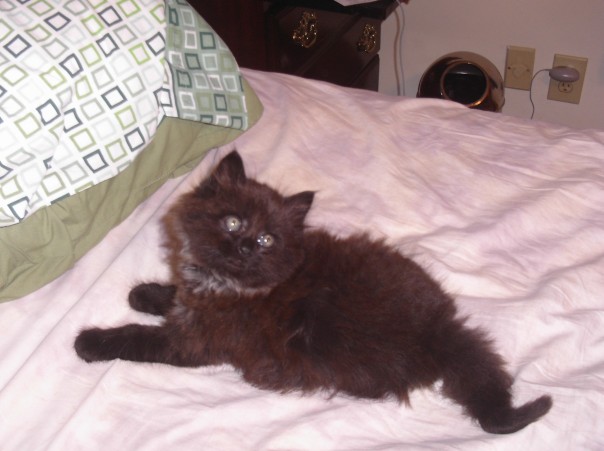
York Chocolate kitten